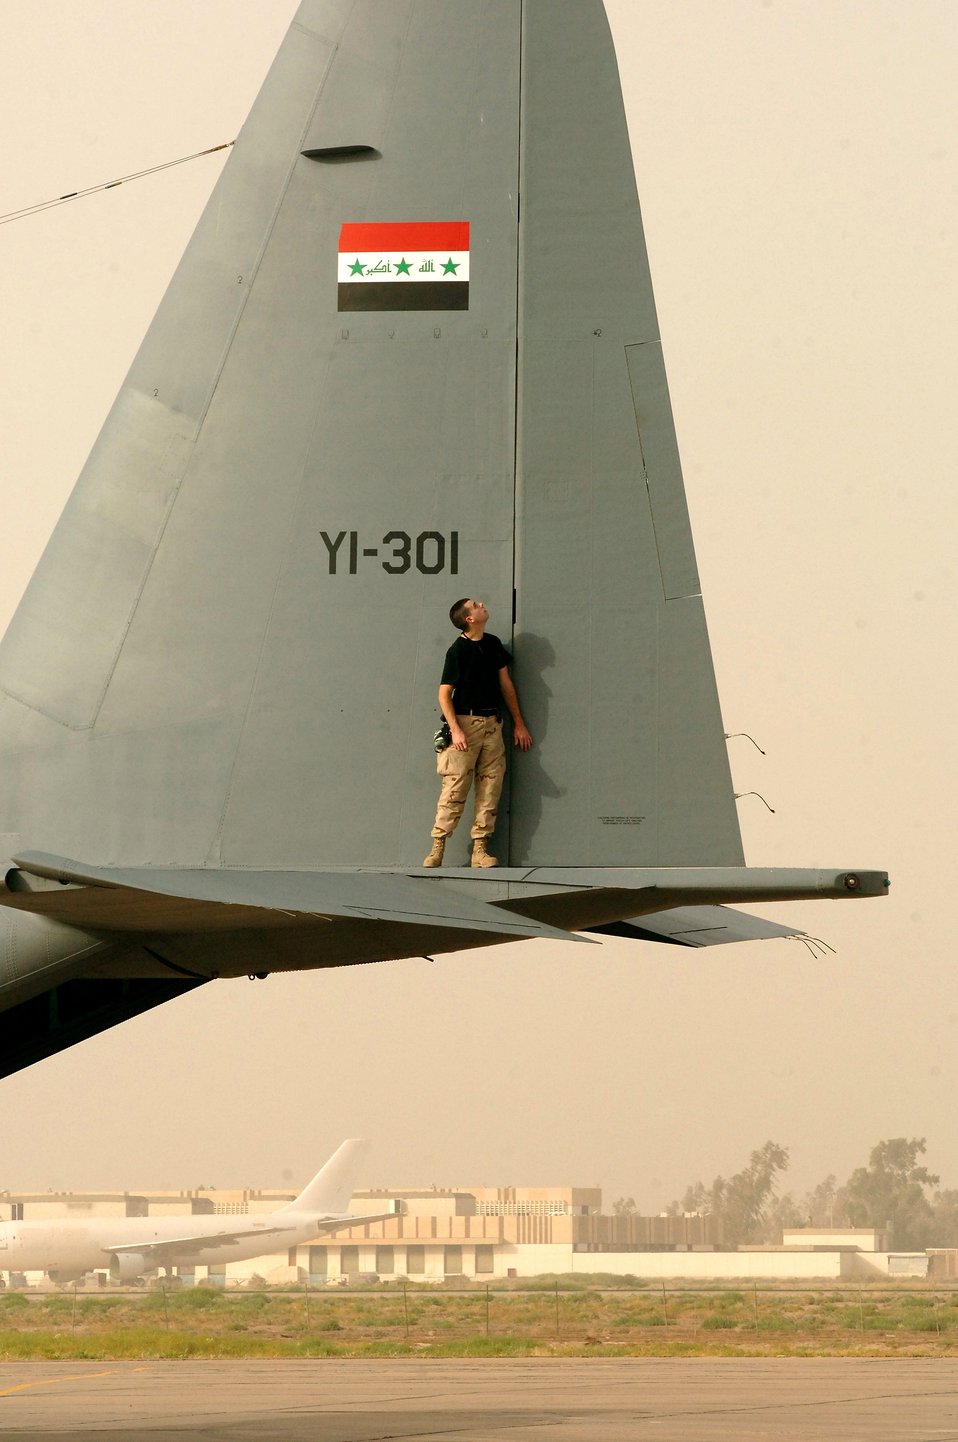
Post-flight check

Senior Airman Jeff McCain performs a post-flight check on an Iraqi C-130 at New Al Muthana Air Base, Iraq, on July 11. Airman McCain is with the Coalition Air Force Transition Team working with Iraqis to rebuild their air force.